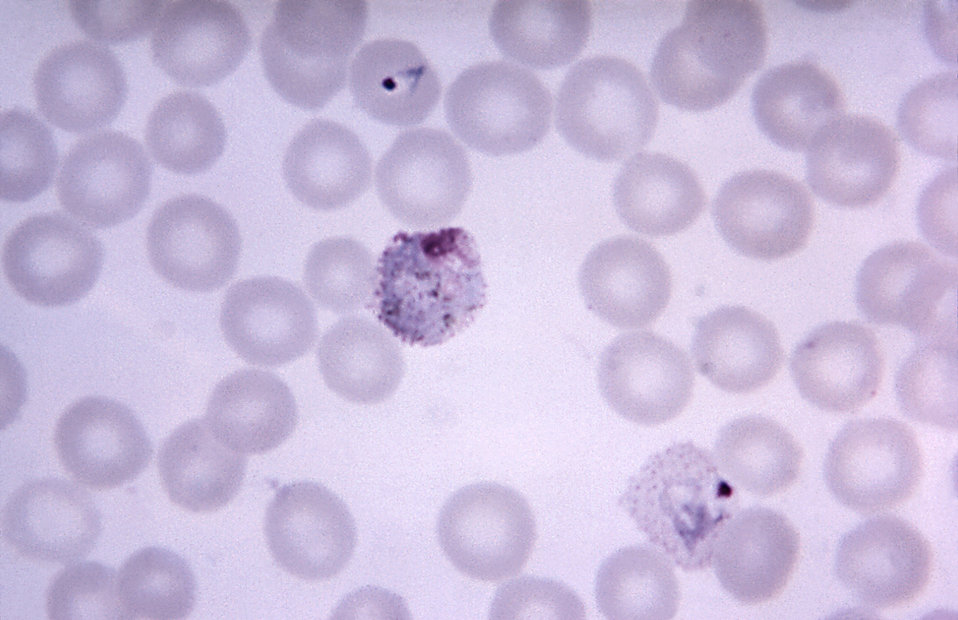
This thin film photomicrograph depicts a mature Plasmodium vivax trophozoite with prominent pigment; Mag. 1125X.